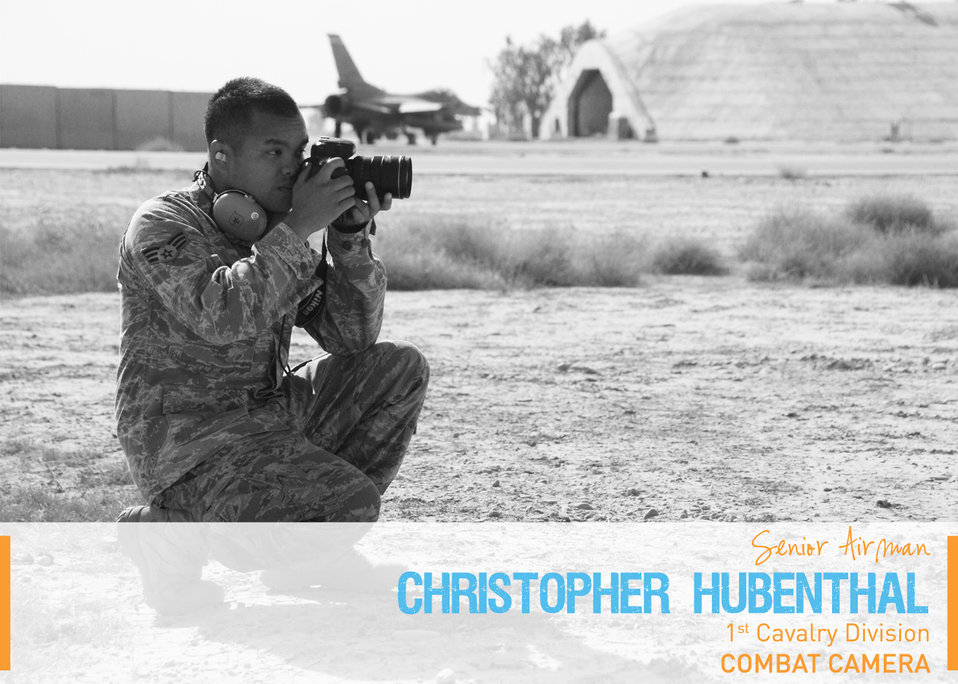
Portraits in Courage Vol 4

Portraits in Courage 4: Senior Airman Christopher Hubenthal, photographer, combat camera, 1st Cavalry Division. He put down his camera under fire from snipers, picked up a fallen Soldier's weapon, returned fire and moved the team to a safe point where the injured Soldier could be evacuated.